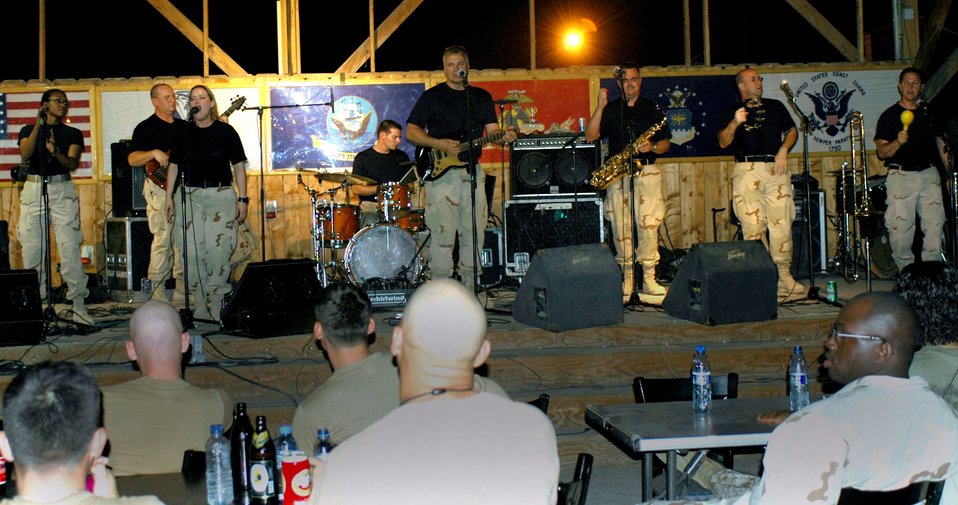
Rock band reaches out to Djiboutian villages

The U.S. Central Command Air Forces band